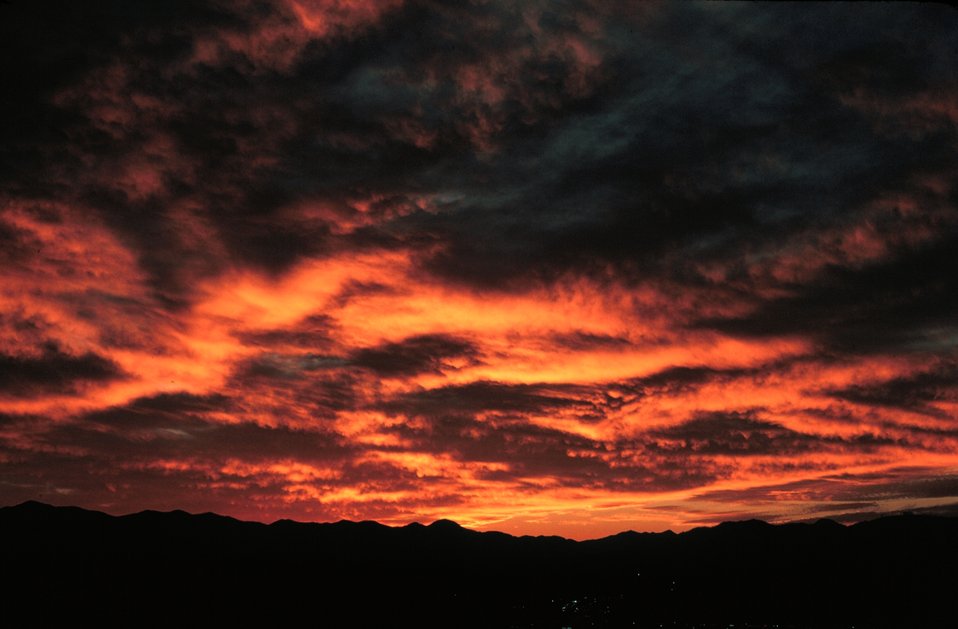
A glorious sunset